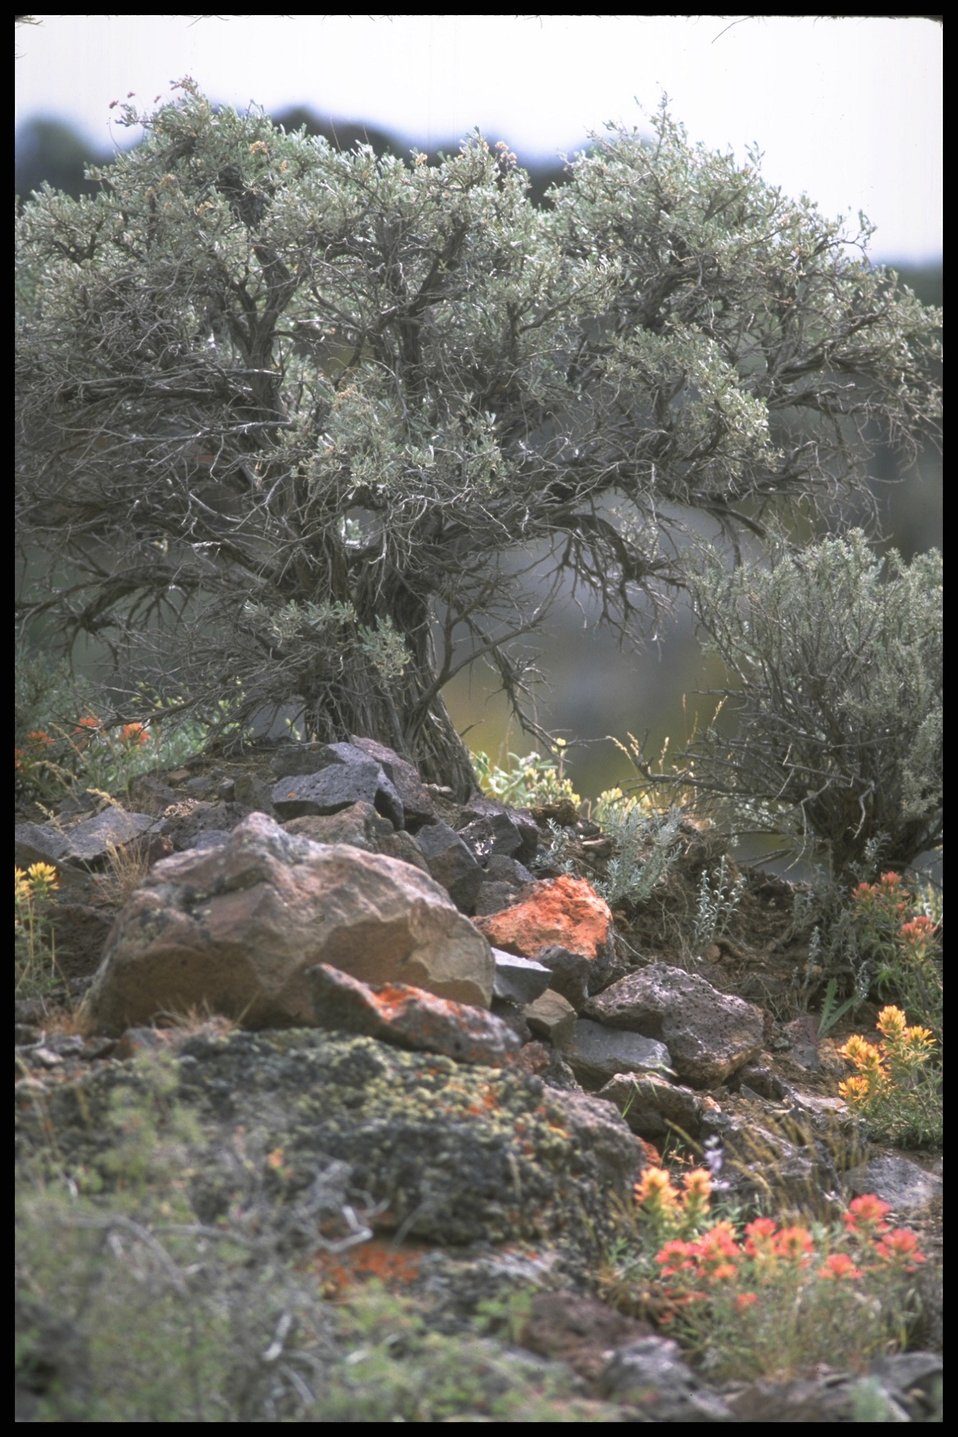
Wildflower habitat, Lakeview District.